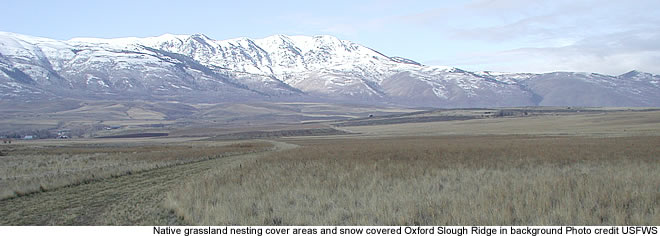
Native grasslands - Oxford Slough Waterfowl Production Area

Some of the upland areas have alkaline soils, covered with native grasses and shrubs; these areas are not grazed or managed. Several native grass hayfields, and irrigated alfalfa fields are hayed to provide short grass feeding areas for geese and cranes. Some dry land cropland has been seeded to dense nesting cover and some is still cooperatively farmed. Part of the marsh is still in private ownership, so no water management is done. The marsh is allowed to fluctuate naturally; in drought years it dries out.